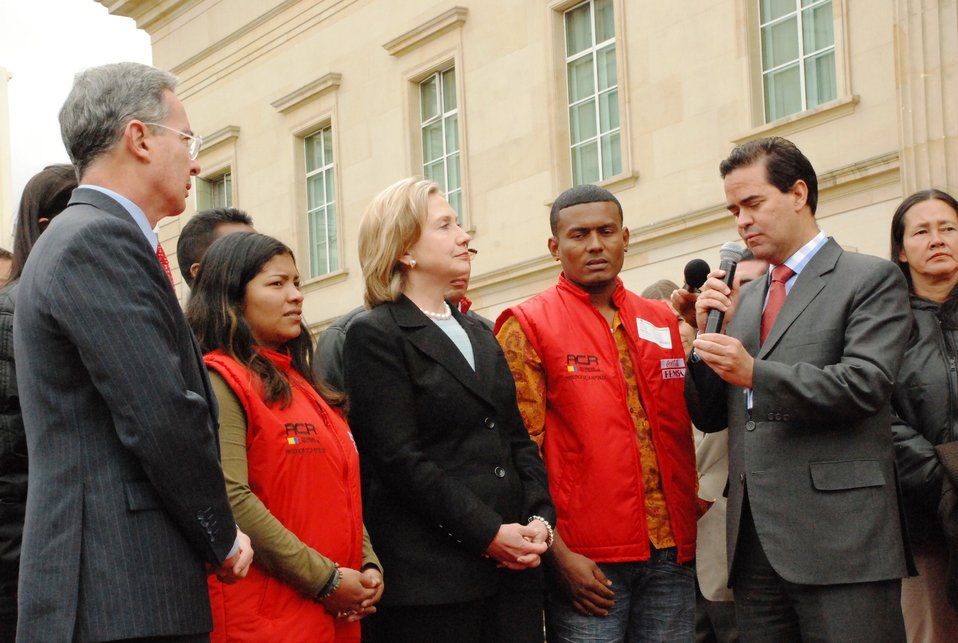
Secretary Clinton and President Uribe Meet With Former Rebels

U.S. Secretary of State Hillary Rodham Clinton and Colombian President Uribe meet a group of former rebels at the Plaza de Armas in Casa de Nariño in Bogotá, Colombia, on June 9, 2010.